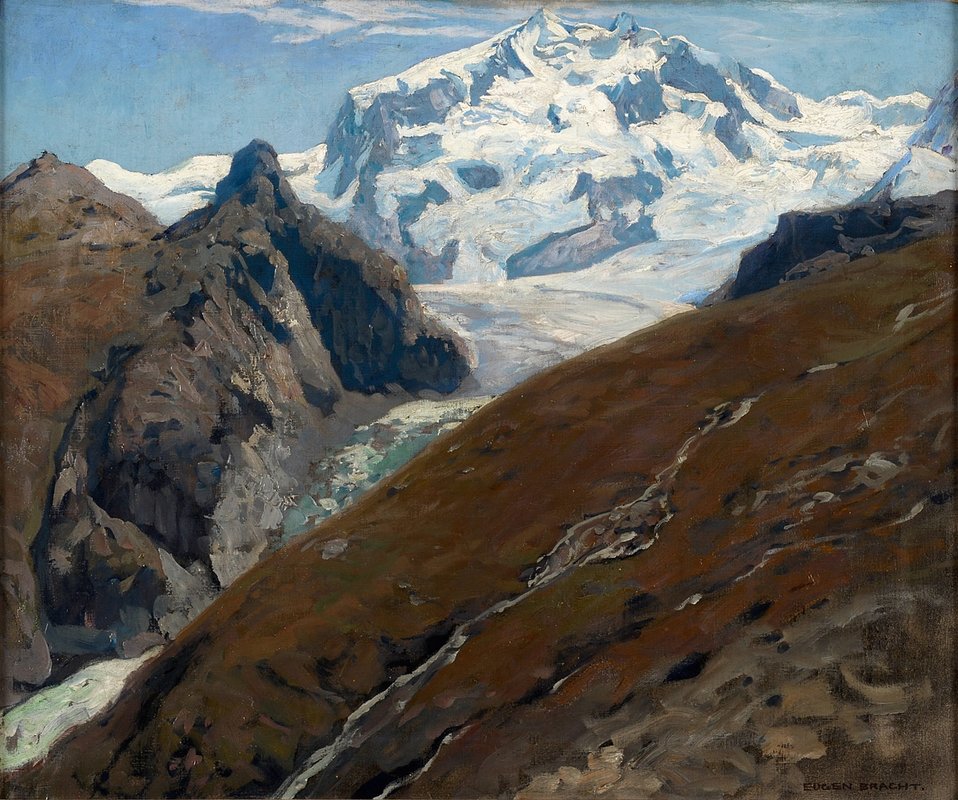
Monte Rosa vom Schwarzsee aus, 1906. Signiert. Rückseite betitelt, datiert und nummeriert 726. Öl/Lwd., 58 x 68 cm. Originalrahmen mit altem Ausstellungsetikett: Sächsischer Kunstverein Dresden Nr. 1340.